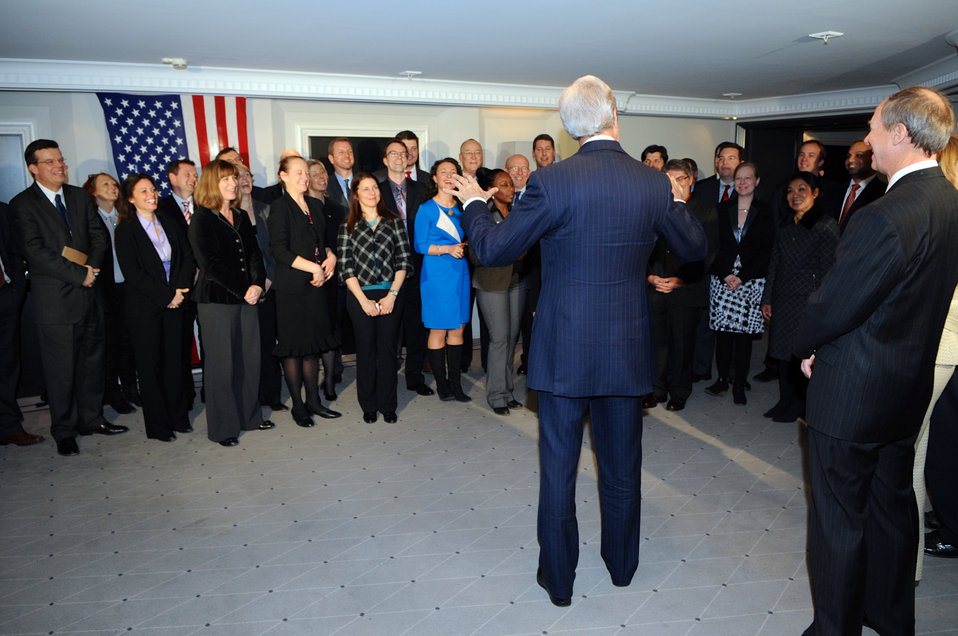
Secretary Kerry Thanks State Department Workers Who Supported Munich Security Conference

U.S. Secretary of State John Kerry, flanked by U.S. Ambassador to Germany John Emerson, thanks State Department employees stationed around Germany who supported the Munich Security Conference in Munich on February 1, 2014.